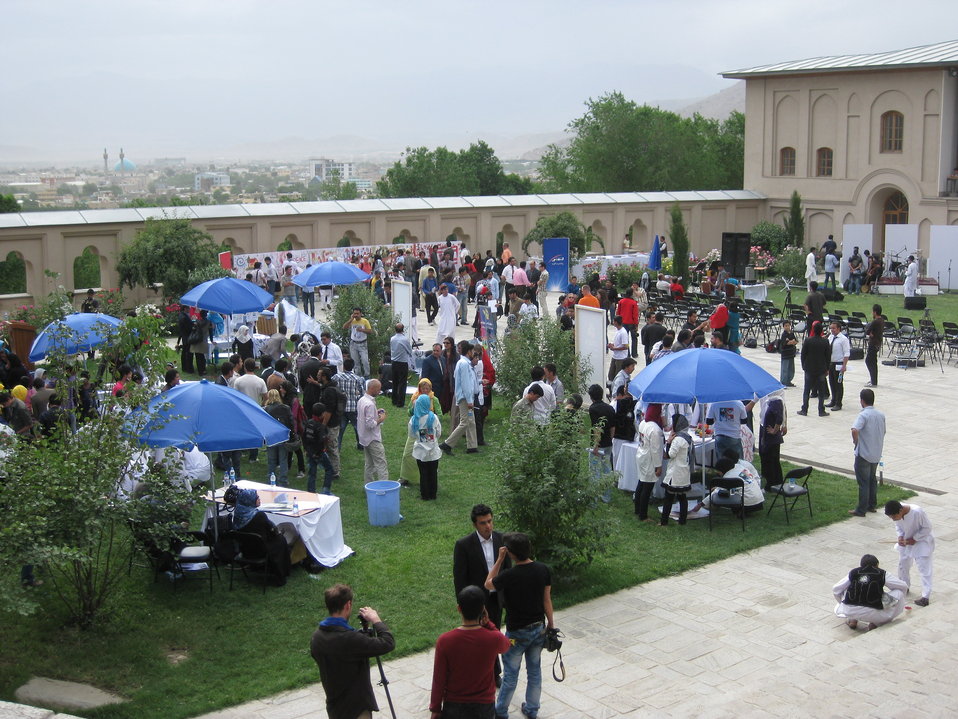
Afghan Youth Voices 079